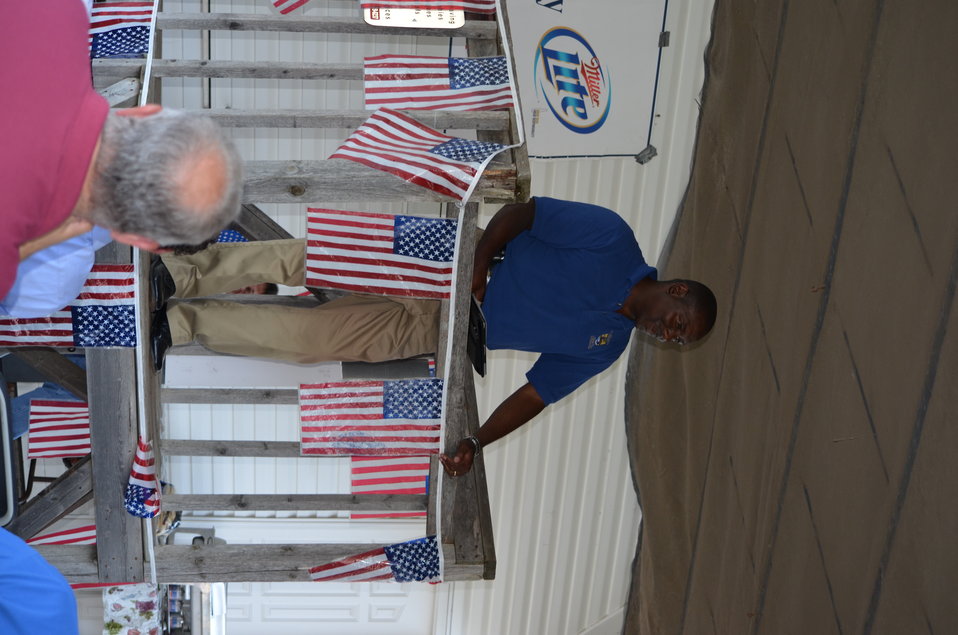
Assistant Director of Migratory Bird Program, Jerome Ford, talks about the Federal Duck Stamp Program at the South Saint Paul Rod and Gun Club.